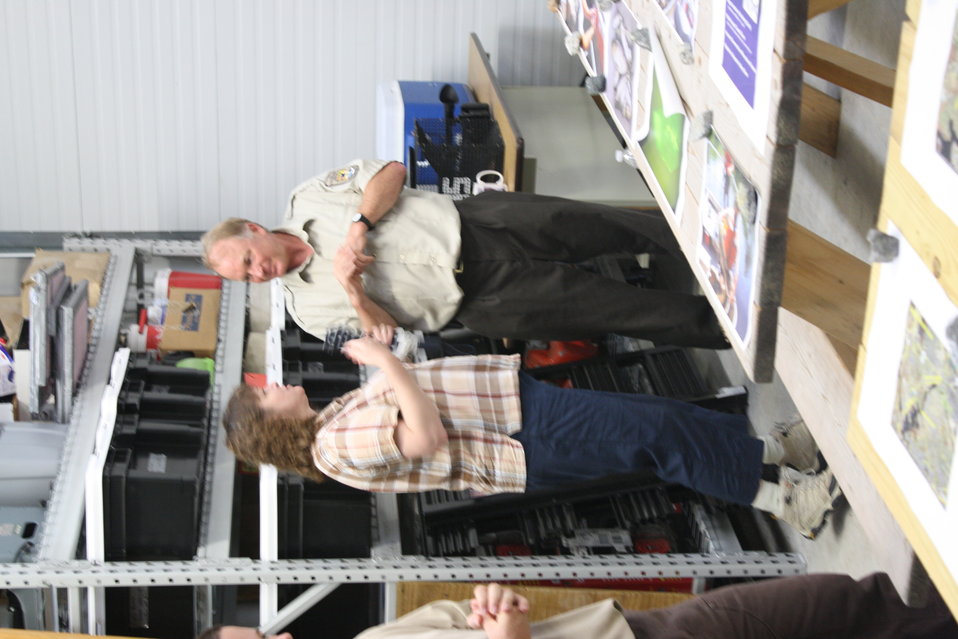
Nashua National Fish Hatchery welcomes regional office employees

Learning about the hatchery.